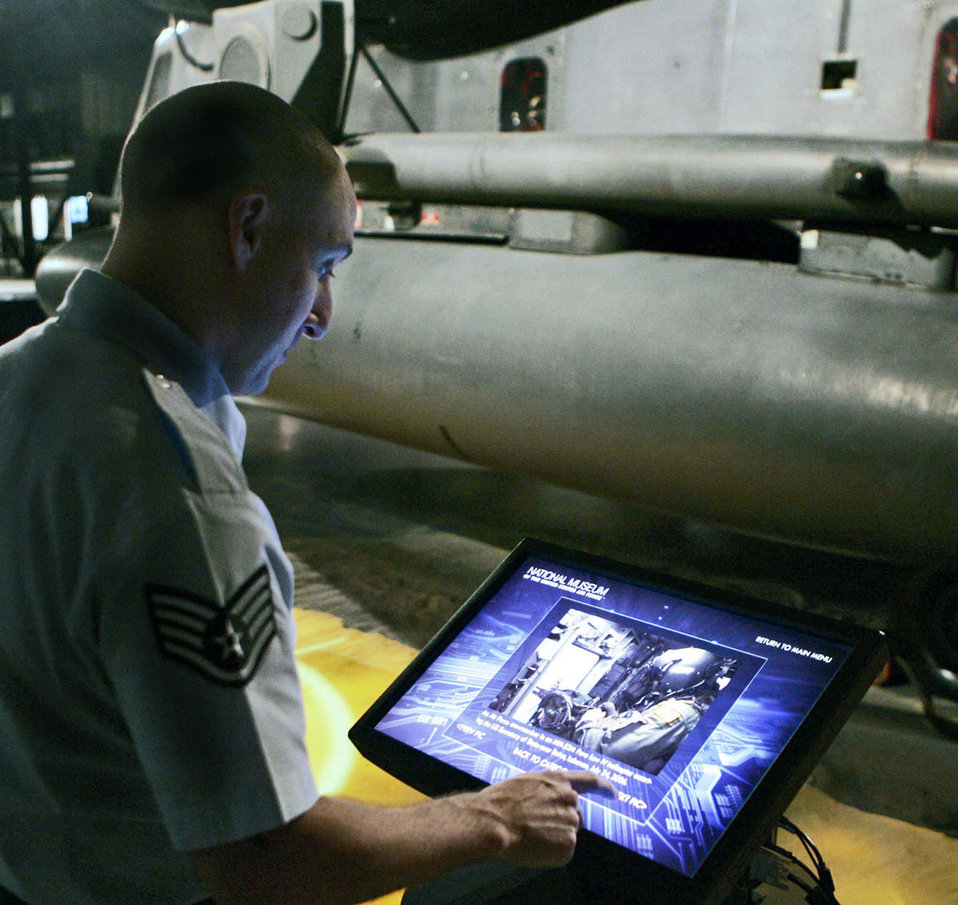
What happens next?

Staff Sgt. Jason Kinney uses a touch screen at the new Warrior Airmen exhibit at the National Museum of the U.S. Air Force. The exhibit in the Cold War Gallery shows the role that Air Force peoplel have played in operations Enduring Freedom and Iraqi Freedom.